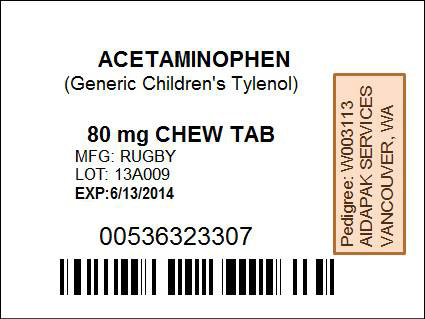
RECALLED - Specific Unit Dose Repackaged Products

August 17, 2013 – Product Recall – Aidapak Services Llc Initiates Voluntary Recall of Selected Pharmaceuticals Repackaged by Aidapak Services Llc Due to Potential Incorrect Labeling Aidapak Shipped Affected Products to Four States Only: Washington, Oregon, California, and Arizona .